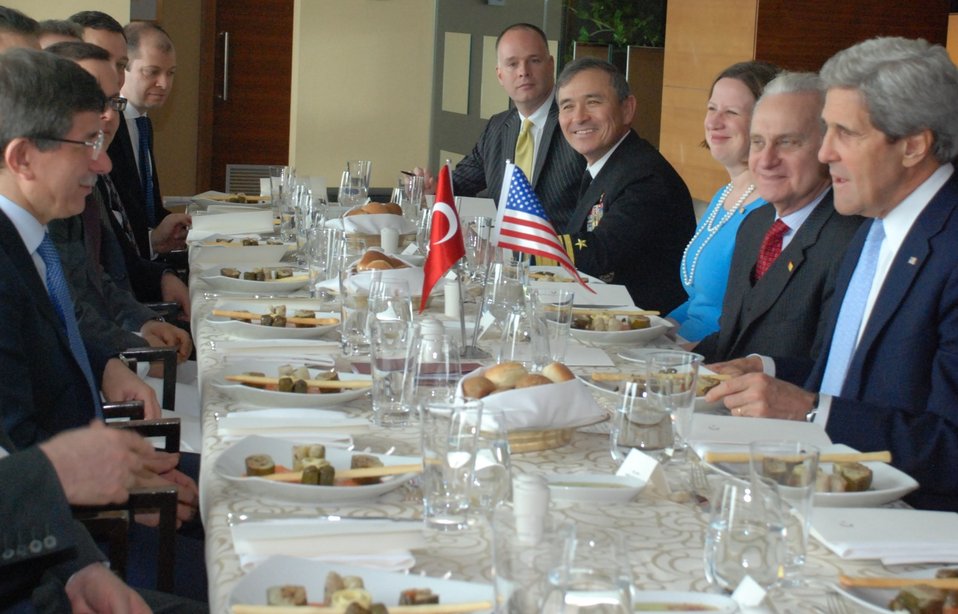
Secretary Kerry Attends a Working Lunch With Turkish Foreign Minister Davutoglu

U.S. Secretary of State John Kerry attends a working lunch with Turkish Foreign Minister Ahmet Davutoglu in Istanbul, Turkey on April 21, 2013.